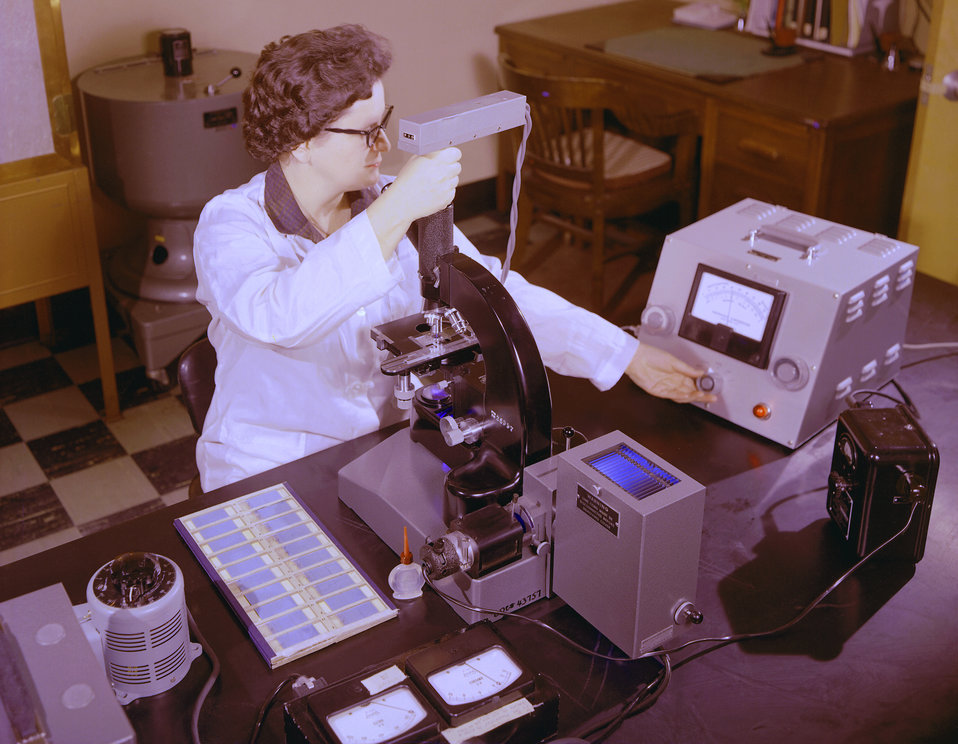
This historic 1963 photograph depicted laboratorian, Bertie Pittman, as she was using a Photovolt� Multiplier Fluorescence Meter.